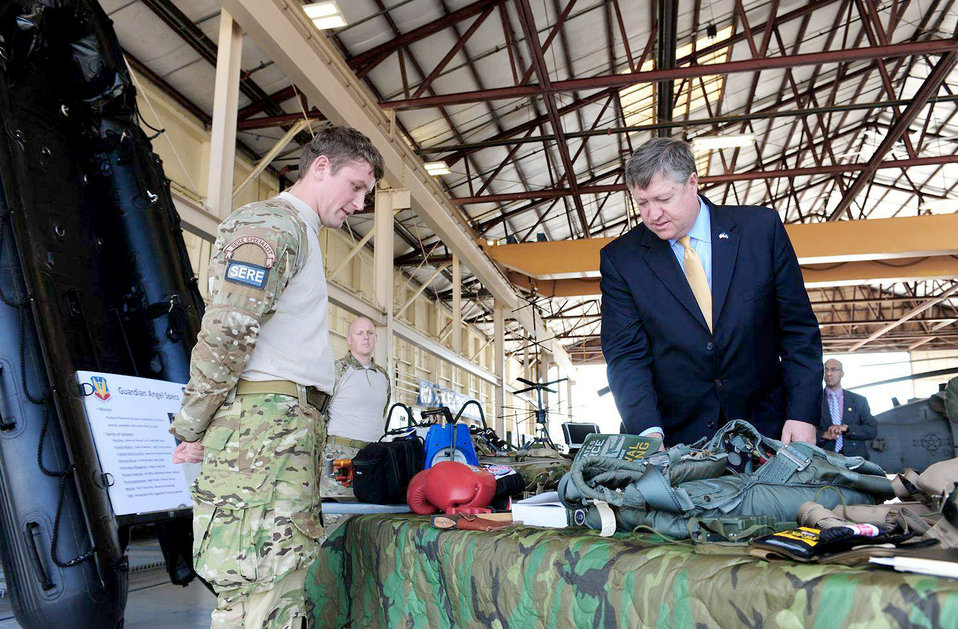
SecAF at Moody

Secretary of the Air Force Michael Donley and Senior Airman Joe Dittmer discuss the equipment used for survival, evasion, resistance and escape training March 8, 2011, during the secretary's visit to Moody Air Force Base, Ga. Airman Dittmer is a SERE specialist assigned to the 347th Operation Support Squadron.